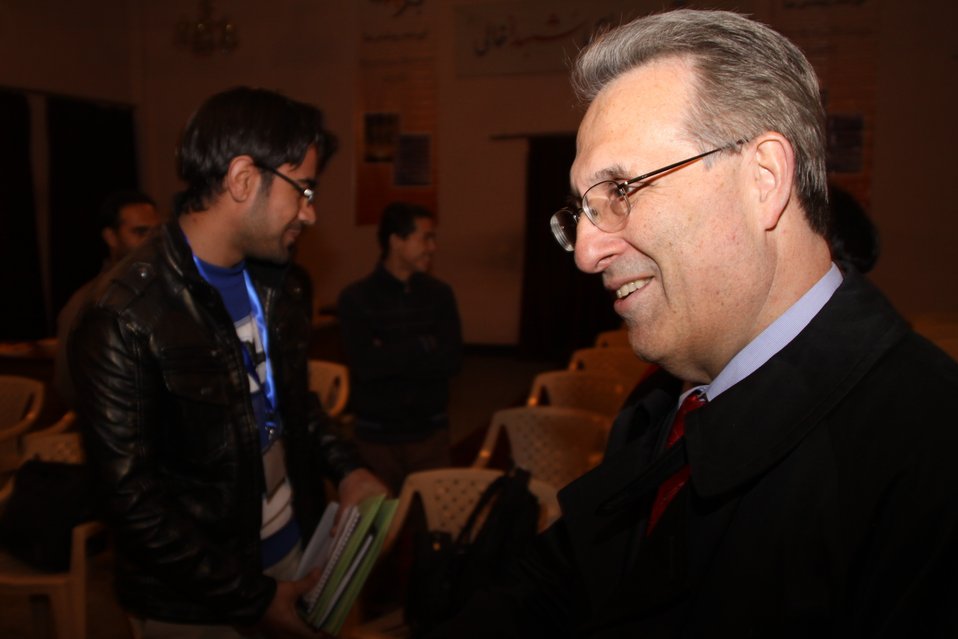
U.S. Ambassador E. Anthony Wayne